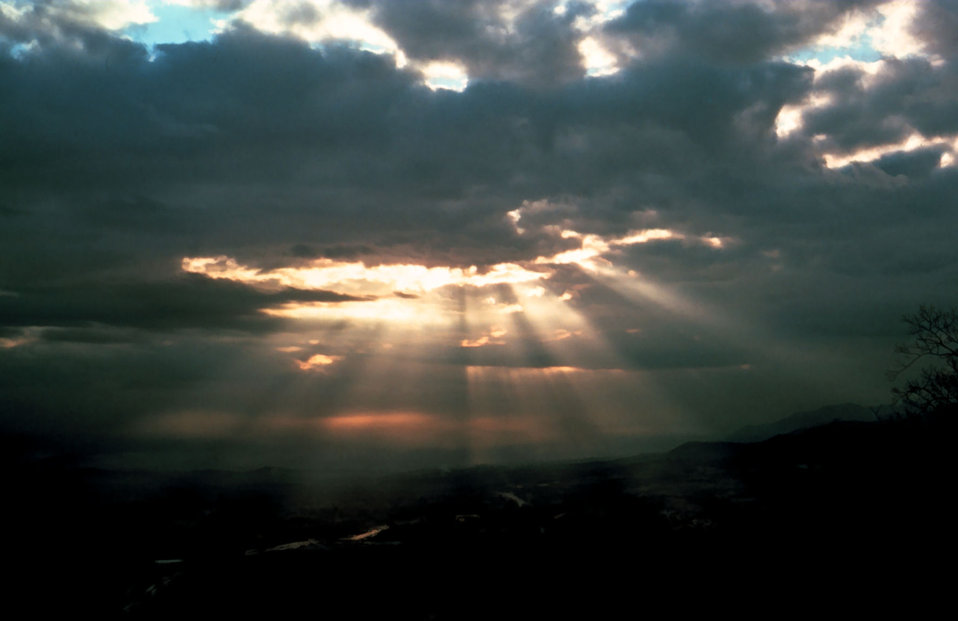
Crepuscular rays